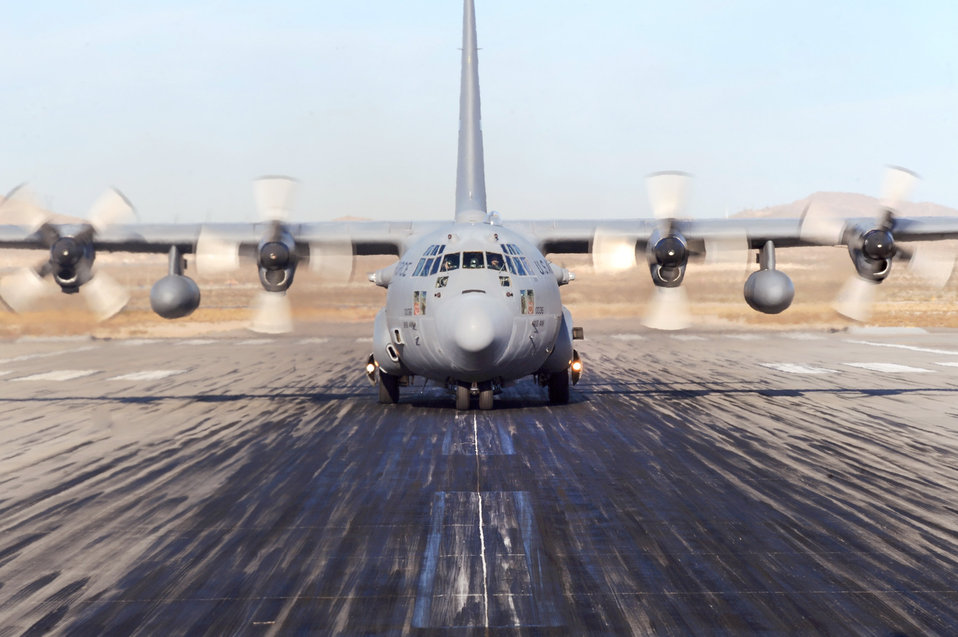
Mobility Air Forces Exercise

A C-130 Hercules taxis down the runway after a Mobility Air Forces Exercise Nov. 17, 2010, at Nellis Air Force Base, Nev. Approximately 40 C-17 Globemaster IIIs and C-130 Hercules assembled in aerial formations over the Nevada Test and Training Range to conduct air and ground operations as part of the bi-annual Air Force Weapons School exercise.